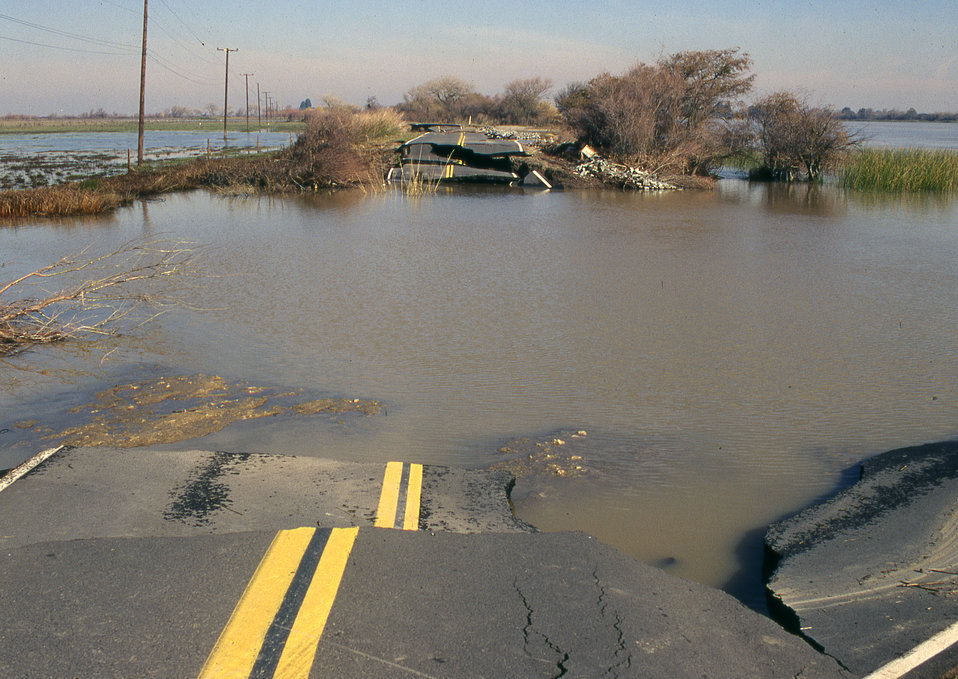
Rio Vista flooding 1997

A levee breach near Rio Vista, Calif., in 1997 flooded neighboring land and destroyed a stretch of the levee road shown.